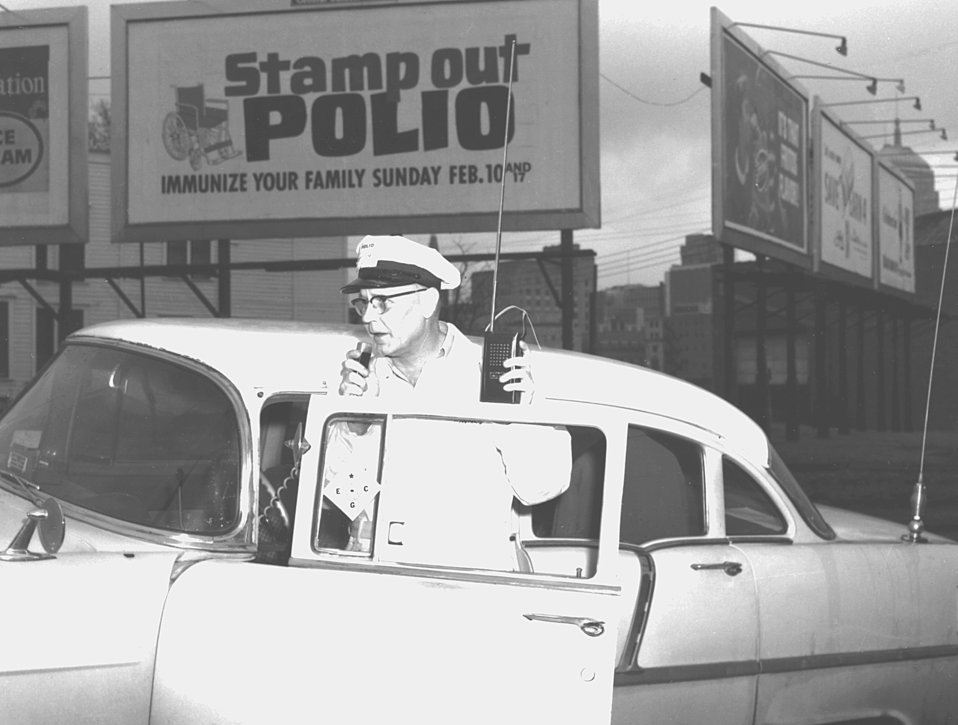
Member of Emergency Citizens Group radioing information to headquarters.